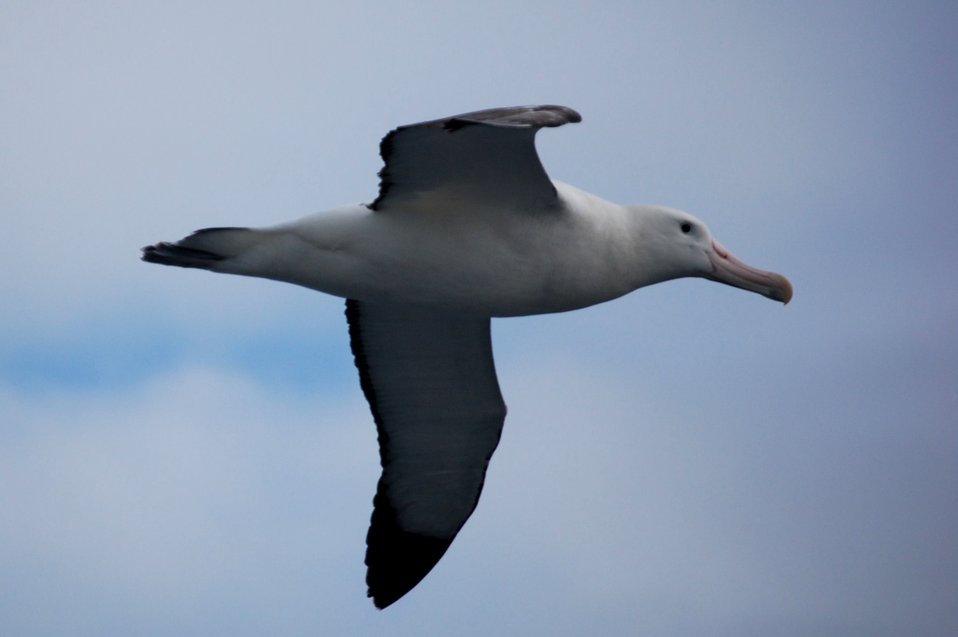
Wandering albatross